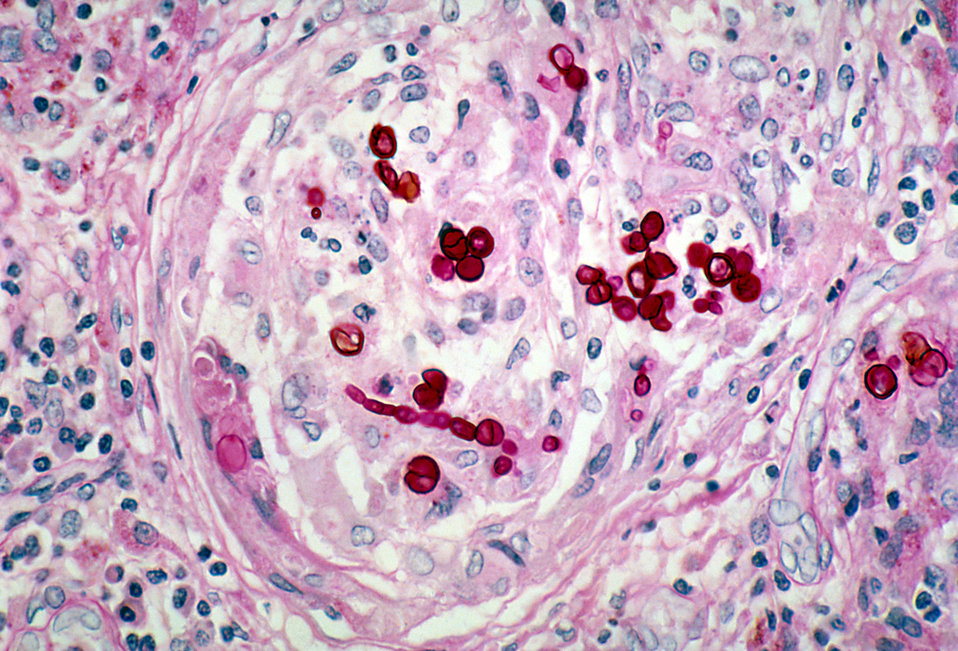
This micrograph reveals the histopathologic changes in phaeohyphomycosis due to Wangiella dermatitidis using PAS stain.